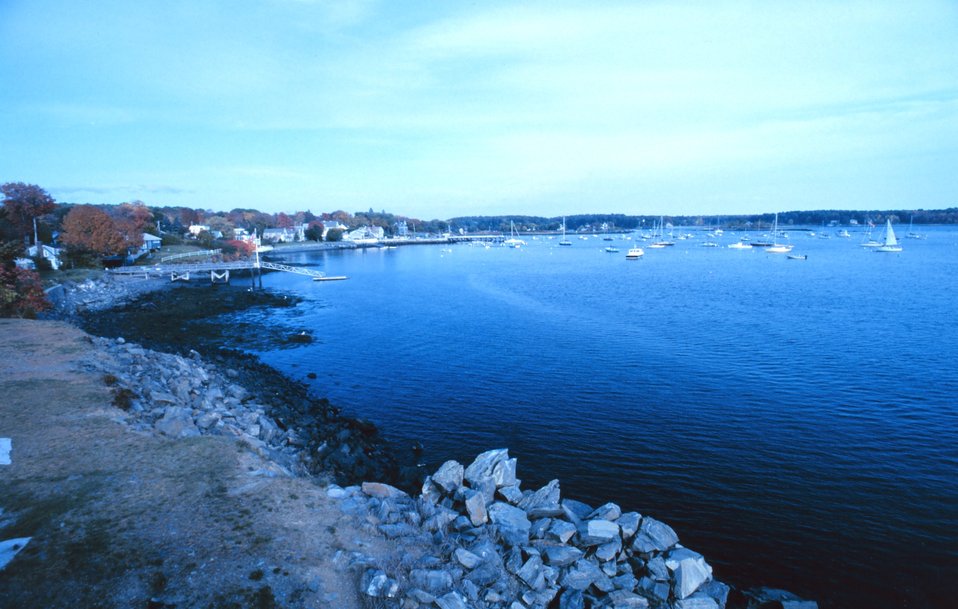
A view in the Portsmouth Harbor area